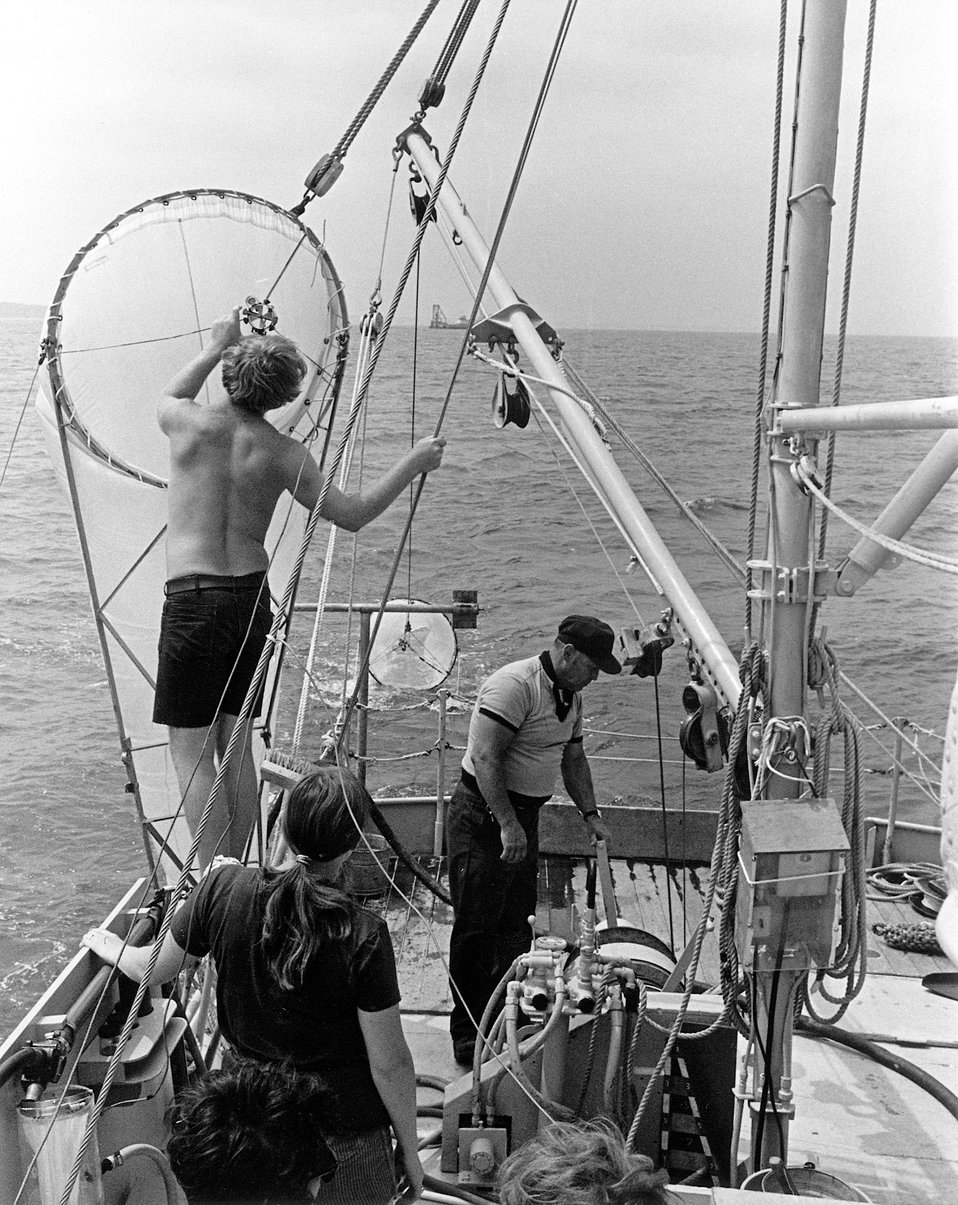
A scientific research team aboard the University of Maryland research vessel Orion readies a plankton net to be lowered into the Chesapeake Bay. Circa 1972.